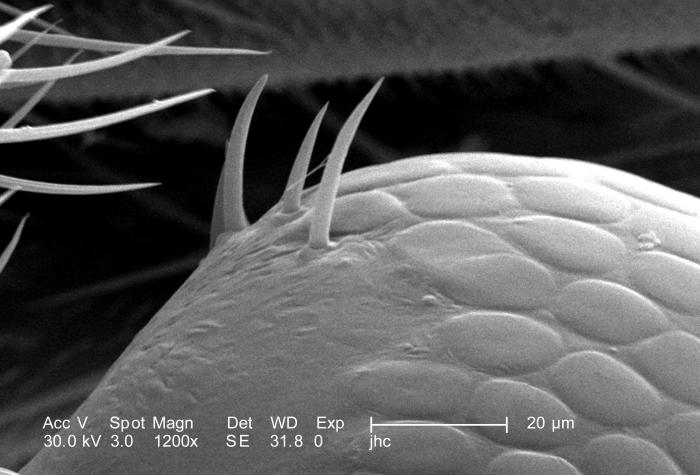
At twice the magnification, i.e., 1200X, as that of PHIL 9905, this scanning electron micrograph (SEM) depicted one of the two compound eyes of an unidentified 1/4"-sized black flying insect with a small red mark on its dorsum, found in the Decatur, Georgia suburbs.The compound eye is given this name due to the fact that the single large eye is really made up of many repeating units known as "ommatidia', each composed of separate units made up of a photoreceptor cell, support cell, and pigment cells. Though each of these visual mechanisms functions as a separate organ, together they provide the organism with a "compound' picture of its environment. Due to what is referred to as the "flicker effect', the compound eye is made very sensitive to movement, with each ommatidium turning on and off, as objects pass across its field of view. The bilateral anatomical placement of the insect's eyes provides the organism with a very wide range of visual sensitivity.